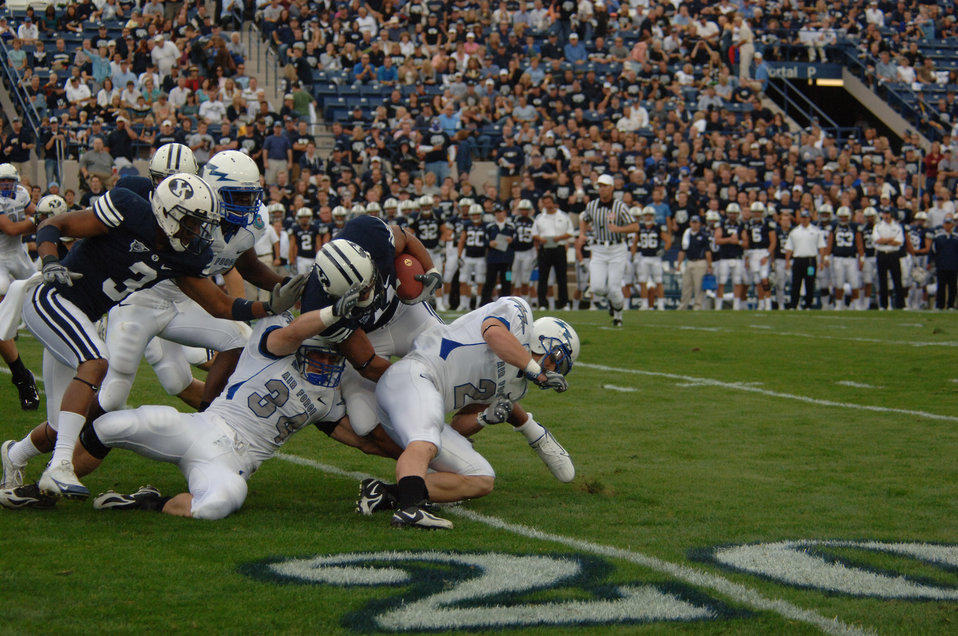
Falcons eye history after BYU loss, seeks redemption at Annapolis

Air Force safety Chris Thomas, 34, and cornerback Carson Bird, 2, double team Brigham Young running back Masese Tonga, Sept. 22 in Provo, Utah. Tonga rushed 14 times for 41 yards and two touchdowns in BYU's 31-6 win.